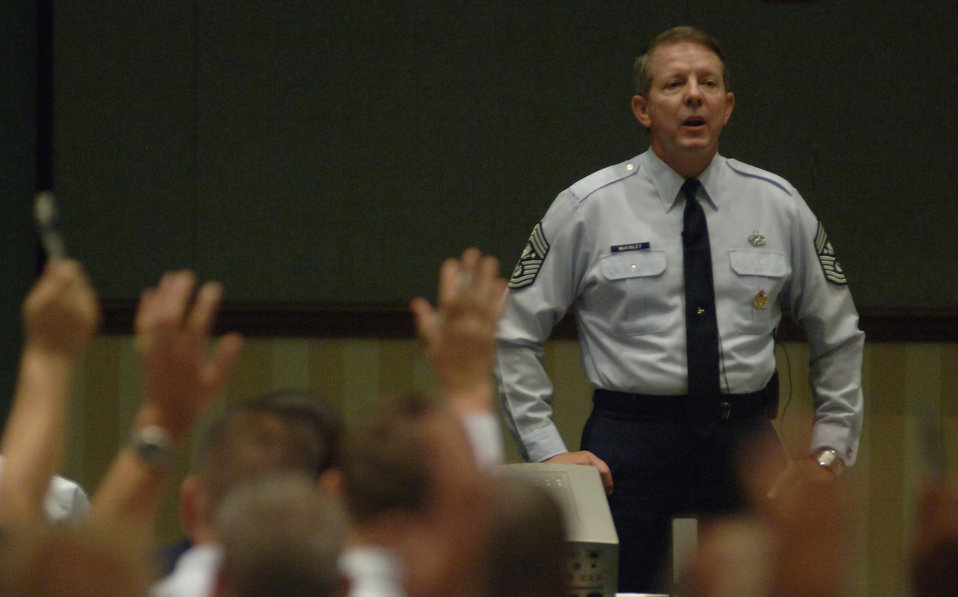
Airmen gather for professional development conferences

Chief Master Sgt. of the Air Force Rodney J. McKinley answers Airmen's questions at the 2007 Air Force Sergeant's Association Professional Airmen's Conference. Chief McKinley is scheduled to speak at this year's conference Aug. 26 and will attend many of the conference's professional development seminars.